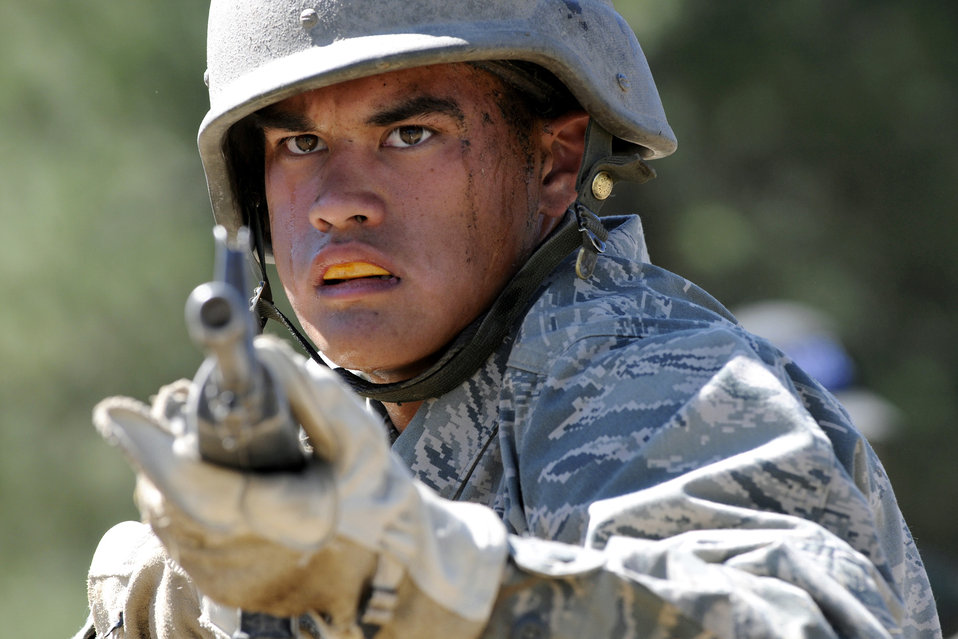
Shoot, don't shoot

U.S. Air Force Academy Basic Cadet Ryan Mavity focuses on the instructor while learning how to handle an M-16 rifle during the second phase of Basic Cadet Training at Jacks Valley, Colo., July 16, 2010.